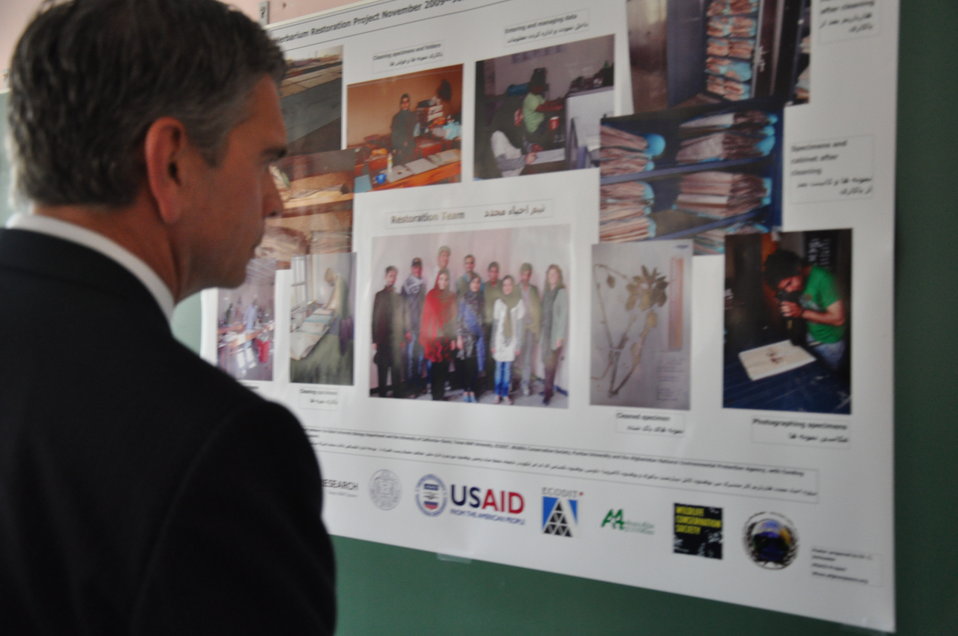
Kabul University Herbarium